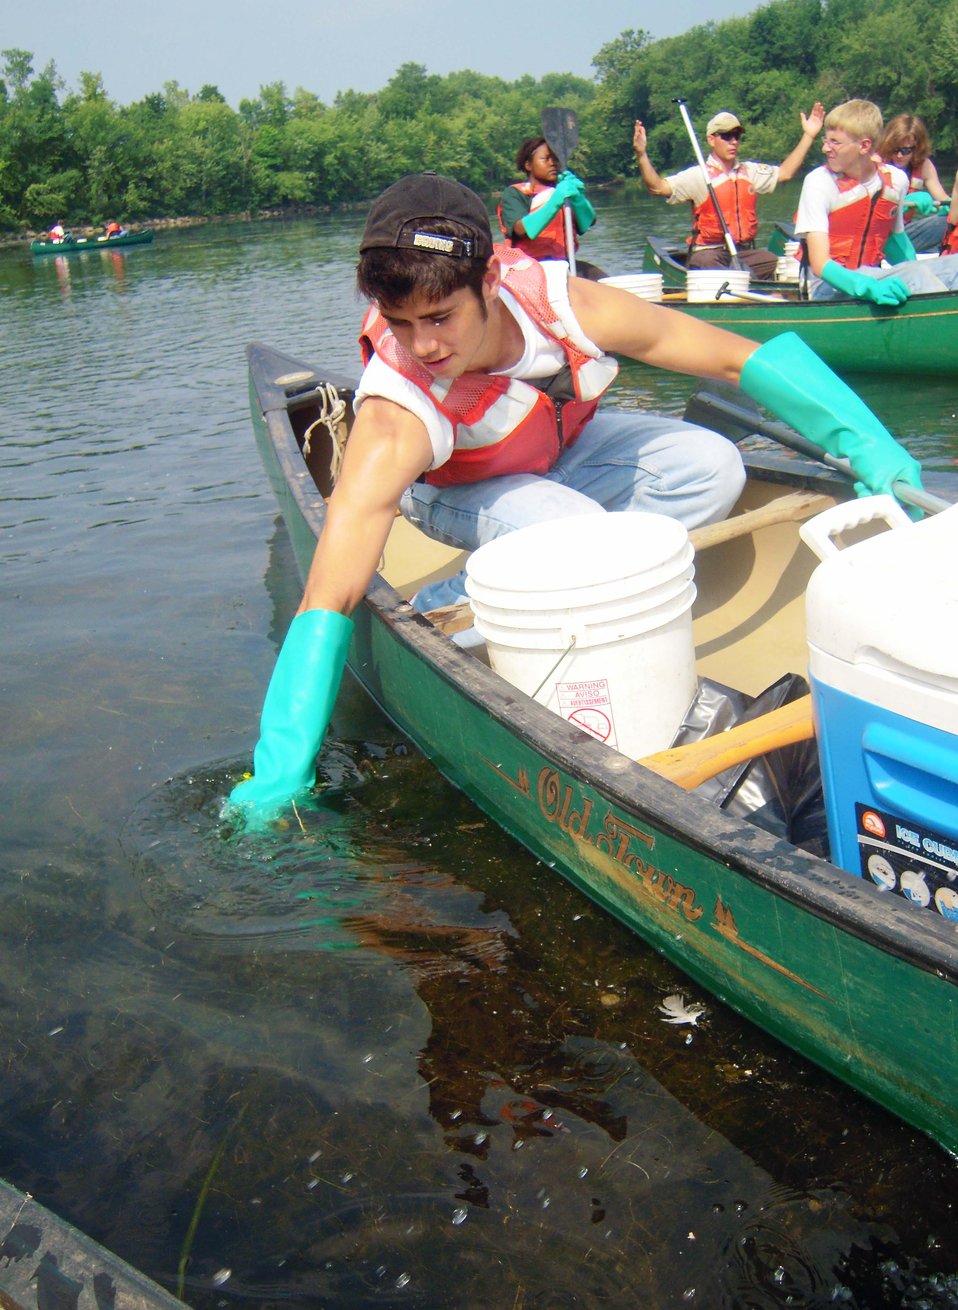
YCC crew removing water chestnut